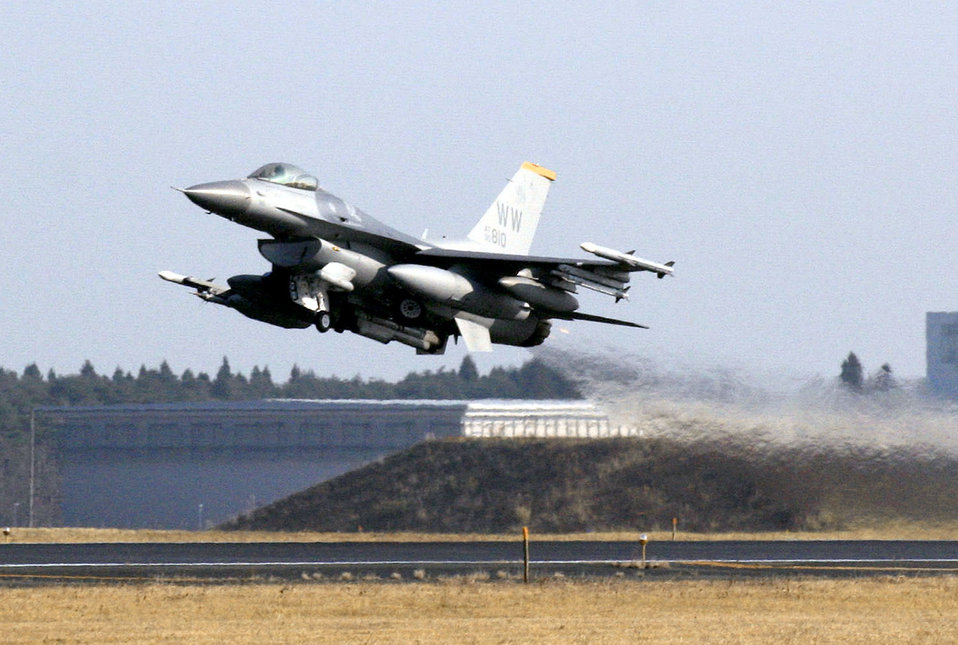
On my way

An F-16 Fighting Falcon from the 35th Fighter Wing takes off at Misawa Air Base, Japan, Nov. 21, 2010. The sortie launched in support of exercise Keen Sword, a bilateral training exercise involving U.S. and Japanese military members.